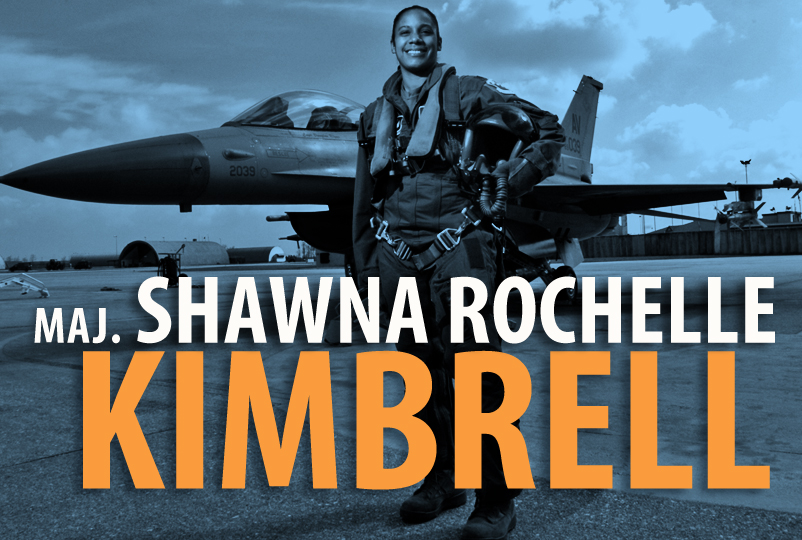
Maj. Shawna Rochelle Kimbrell